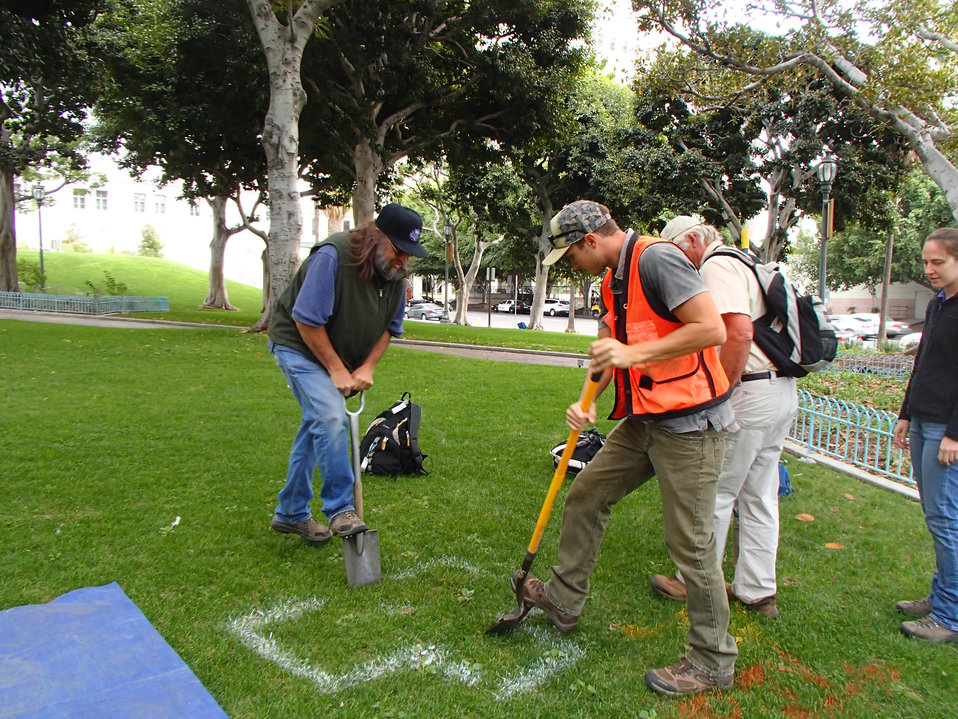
Soil Survey

U.S. Department of Agriculture (USDA) Natural Resources Conservation Service (NRCS) employees Kit Paris and Randy Riddle take soil samples in downtown Los Angeles, CA.